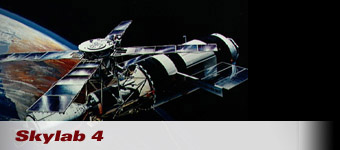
Skylab space station

An artist's concept of the Skylab space station cluster in Earth's orbit. The cluster is composed of the Apollo Command/Service Module, orbital workshop, Apollo telescope mount, multiple docking adapter and airlock module. Note the arrays of solar cell panels which turn sunlight into electric power for the space station.